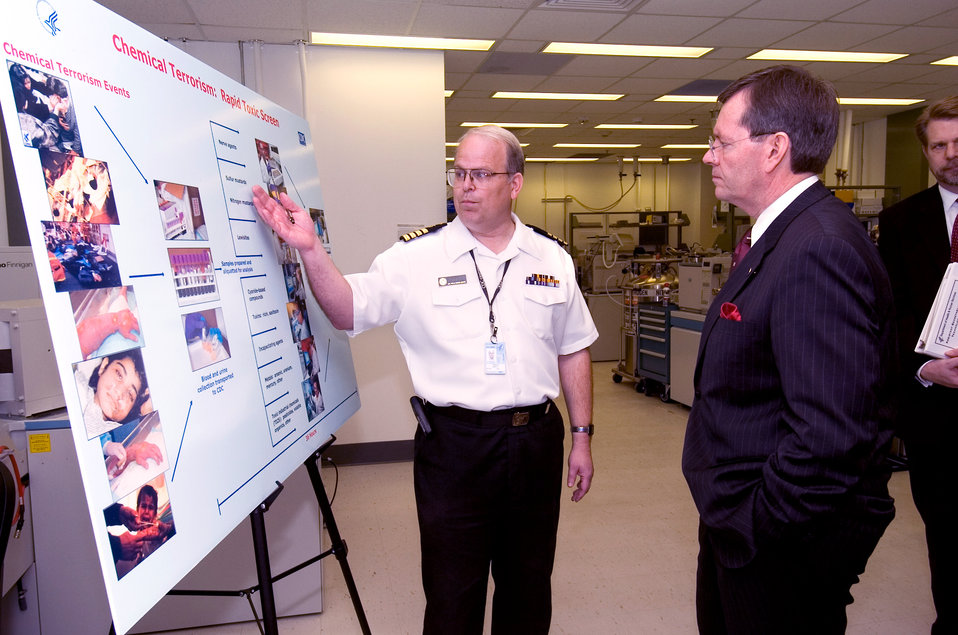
This 2005 photograph of Deputy Director for Science, Dr. James L. Pirkle (left), and newly appointed Secretary of Health and Human Services, Michael O. Leavitt, was taken while Dr. Pirkle was reviewing the processes involved in conducting a response to a chemical terrorist attack.